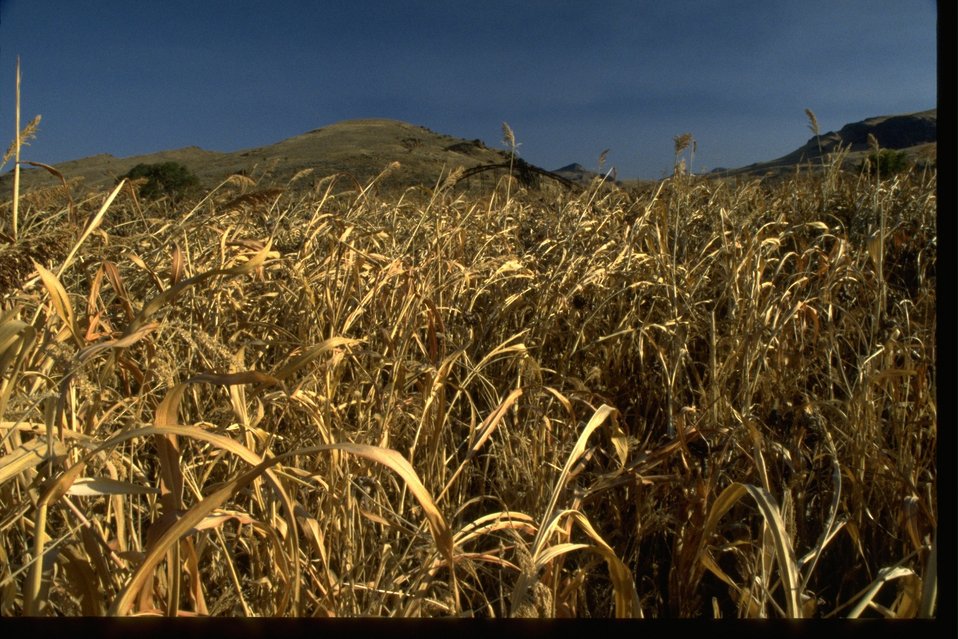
Wild grain and sunflower field near the John Day River.